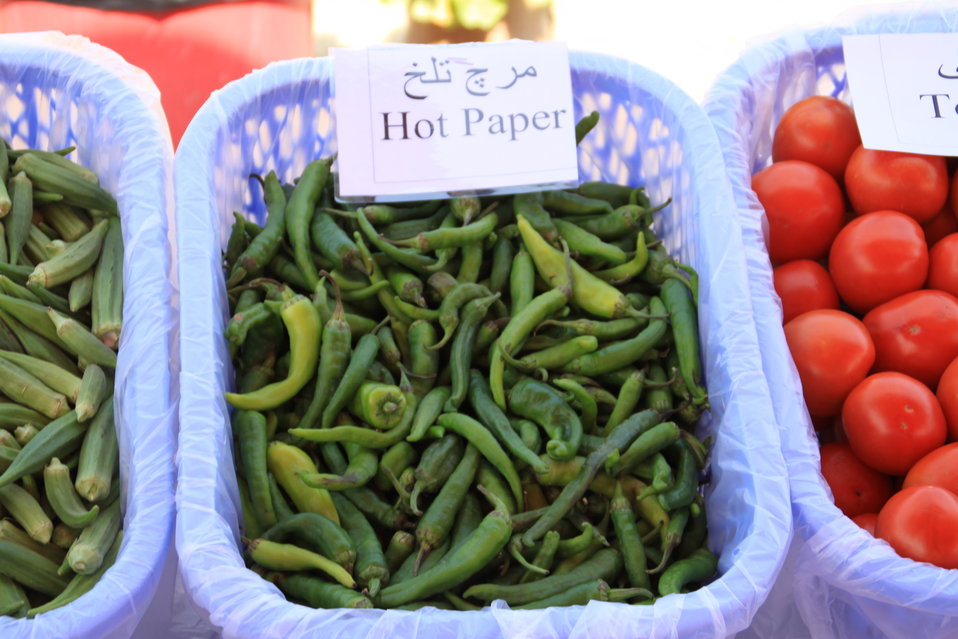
Badam Bagh Farm